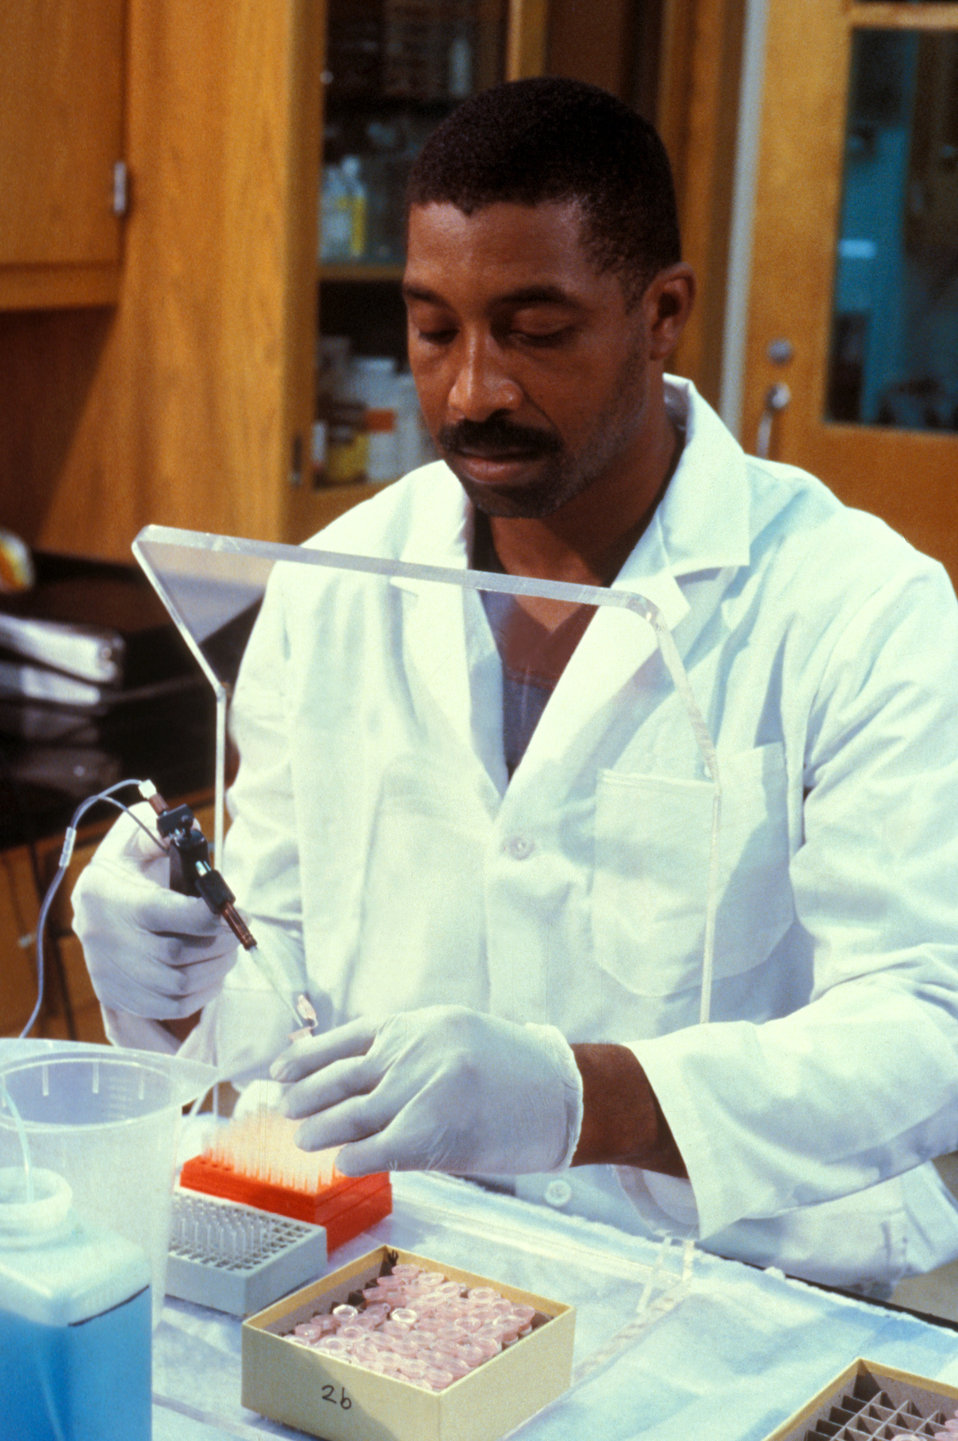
This CDC lab technician is carrying out AIDS research during 1988 laboratory studies.